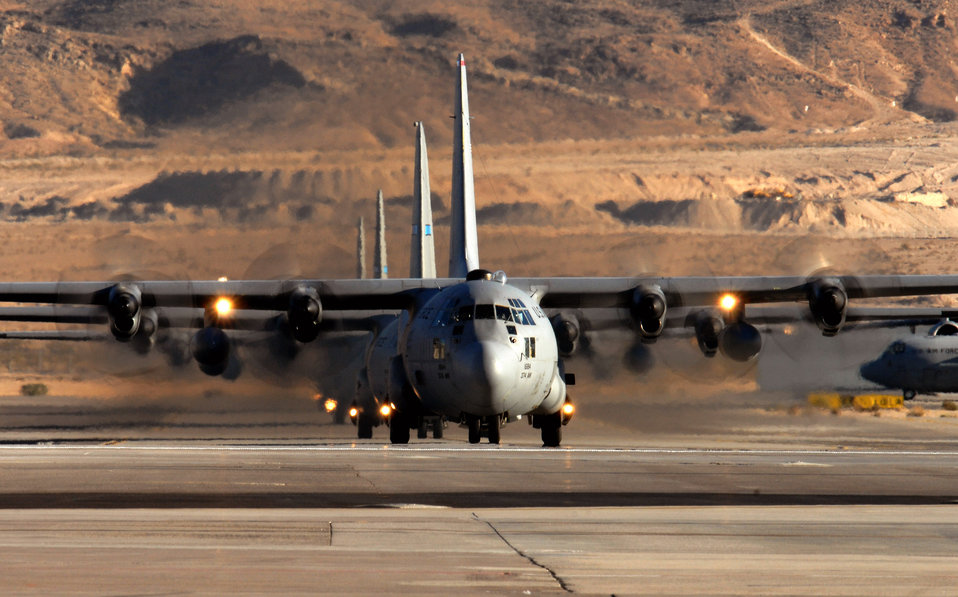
Follow the leader

A formation of C-130 Hercules taxis in after a training mission Nov. 19 during a mobility exercise at Nellis Air Force Base, Nev. The exercise tests the ability of airlift crews from 12 bases to join together at a specific time and location to drop a brigade-size force anywhere in the world.